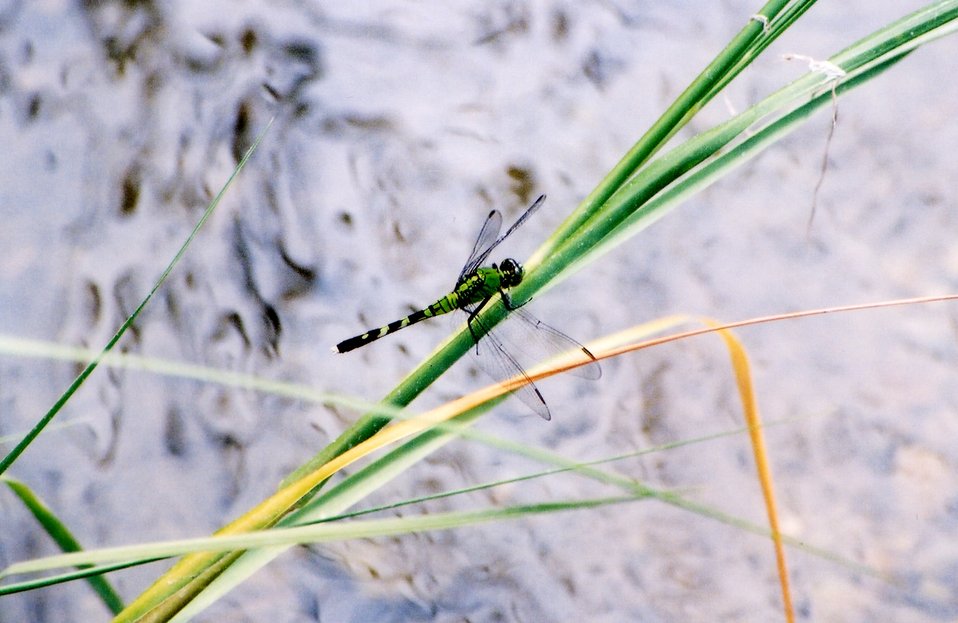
Eastern pondhawk dragonfly - Erythemis simplicicollis.